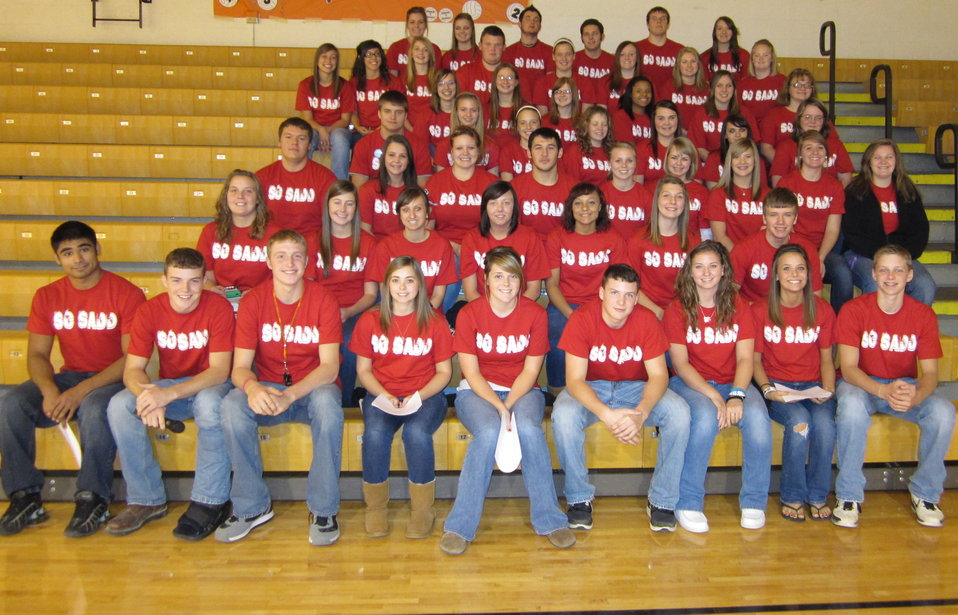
South Central High SADD Assembly Greenwich, OH

Students at the National Drug Facts Week assembly for the South Central SADD organization in Greenwich, Ohio.